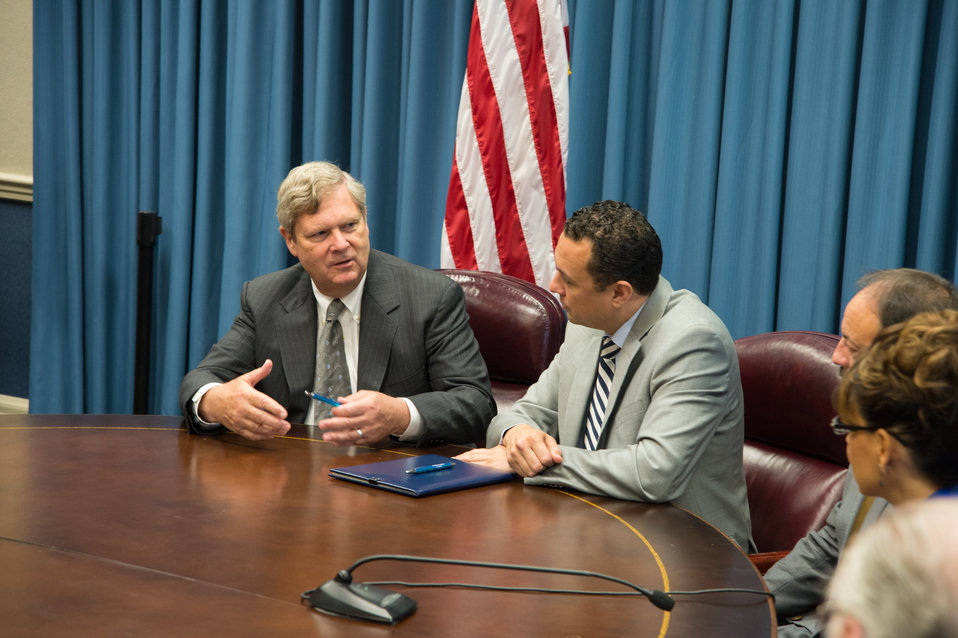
Agriculture Secretary Tom Vilsack and National Hispanic Leadership Agreement and Labor Council Executive Director Hector Sanchez discuss the U.S. Department of Agriculture’s (USDA) deep commitment to Hispanic employment and immigration reform after signing a Memorandum of Understanding (MOU) strengthening USDA’s commitment to Hispanic employment and immigration reform at USDA in Washington, D.C. on Thursday, May 22, 2014.